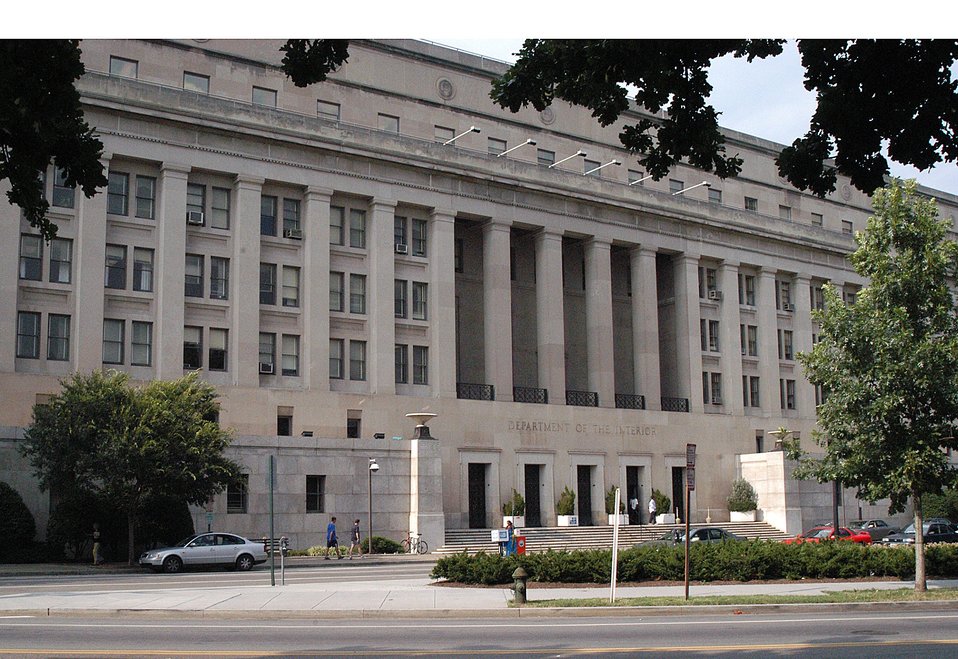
Department of the Interior building in Washington DC on 1849 C Street N.W. Photo by Tom Iraci, July 2004.